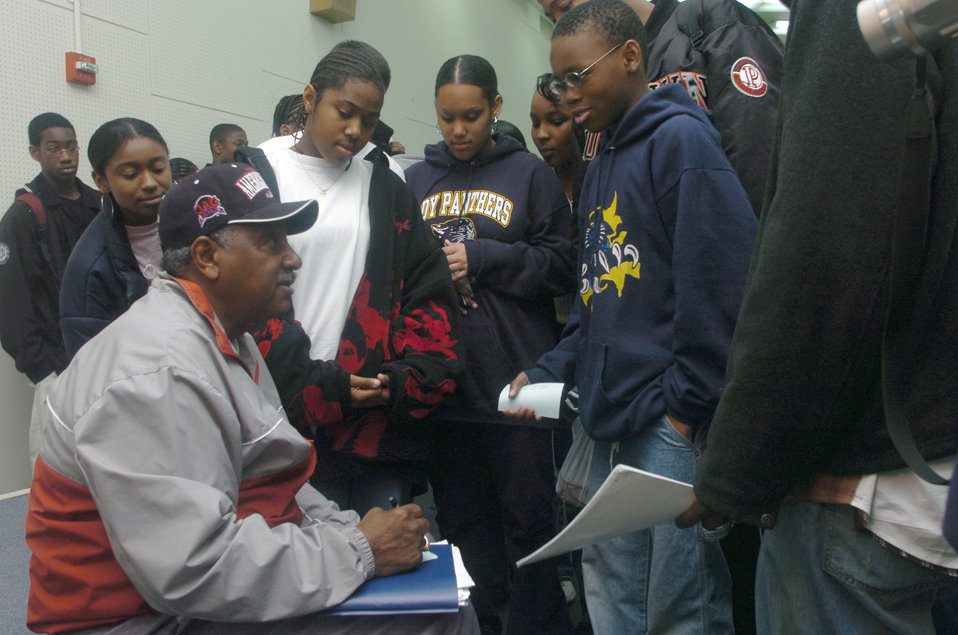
Former Negro Baseball League player visits Yokota

YOKOTA AIR BASE, Japan -- Dennis Biddle, a former Negro Baseball League star, signs autographs for high school students during his visit here. Mr. Biddle shared the unwritten story of the league at various schools and organizations during his 10-day visit to Japan.